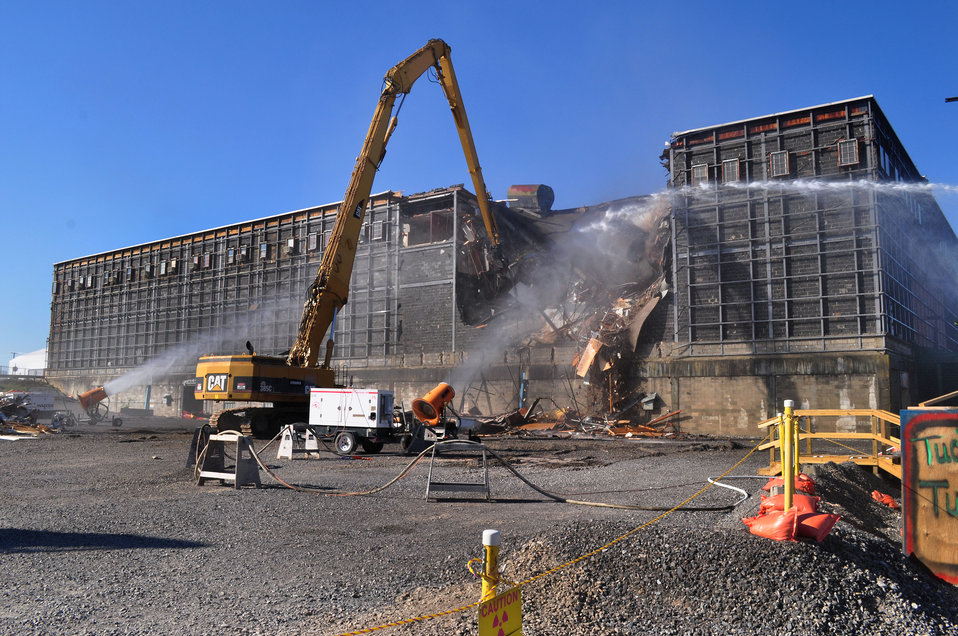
K-25 Beginning of North Tower Demolition

12-160-0336 DOE photo Lynn Freeny 10-24-2012 Oak Ridge Tennessee